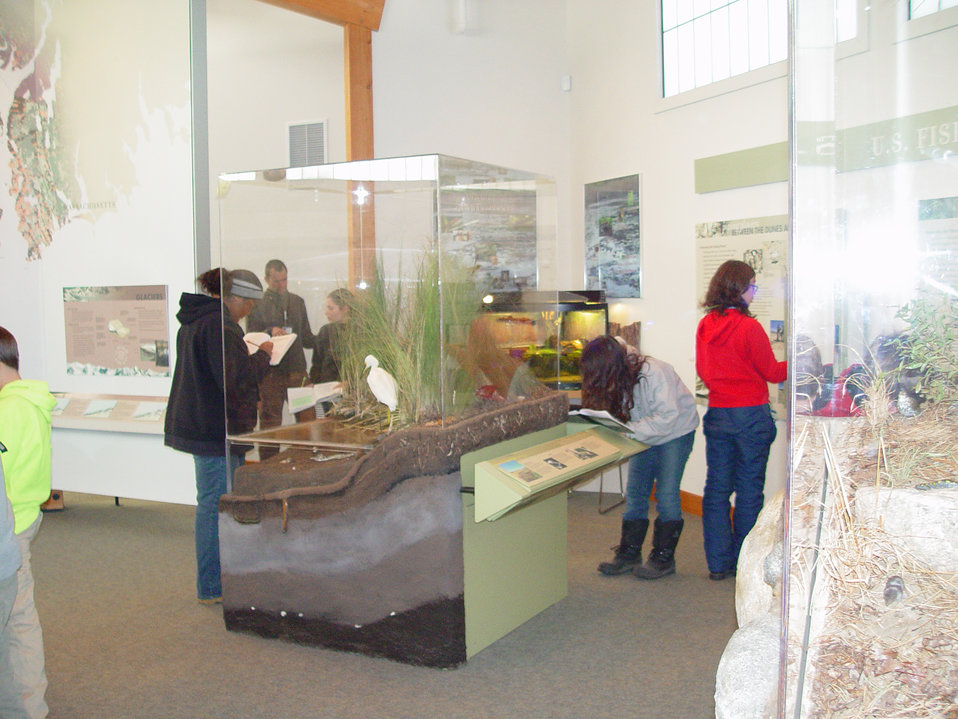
Kettle Pond Visitor Center

School group at the Kettle Pond Visitor Center in Charlestown, RI.